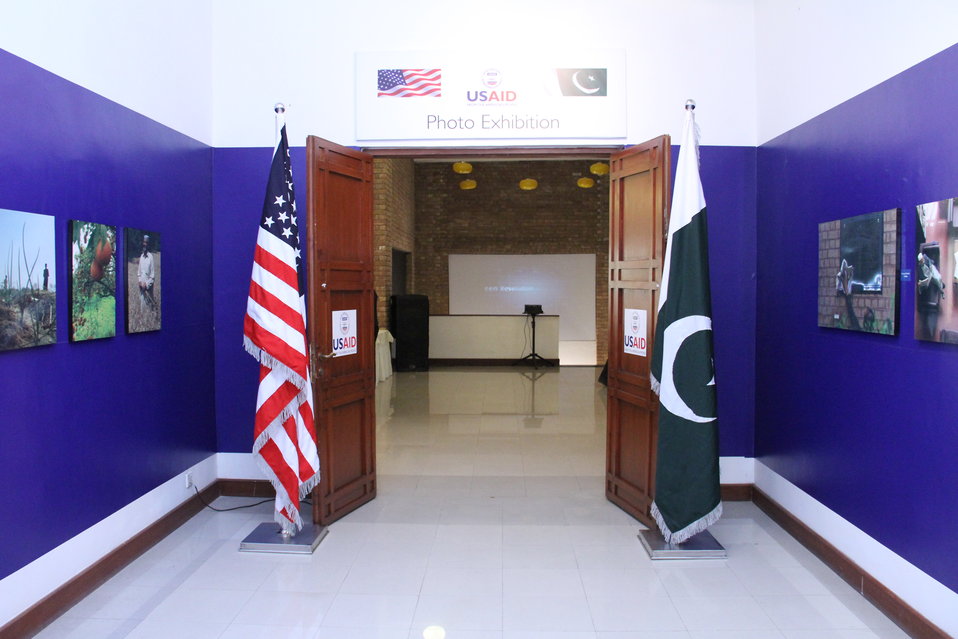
Photo Exhibition Celebrate US-PAK Cooperation at PNCA, Islamabad on April 13, 2012